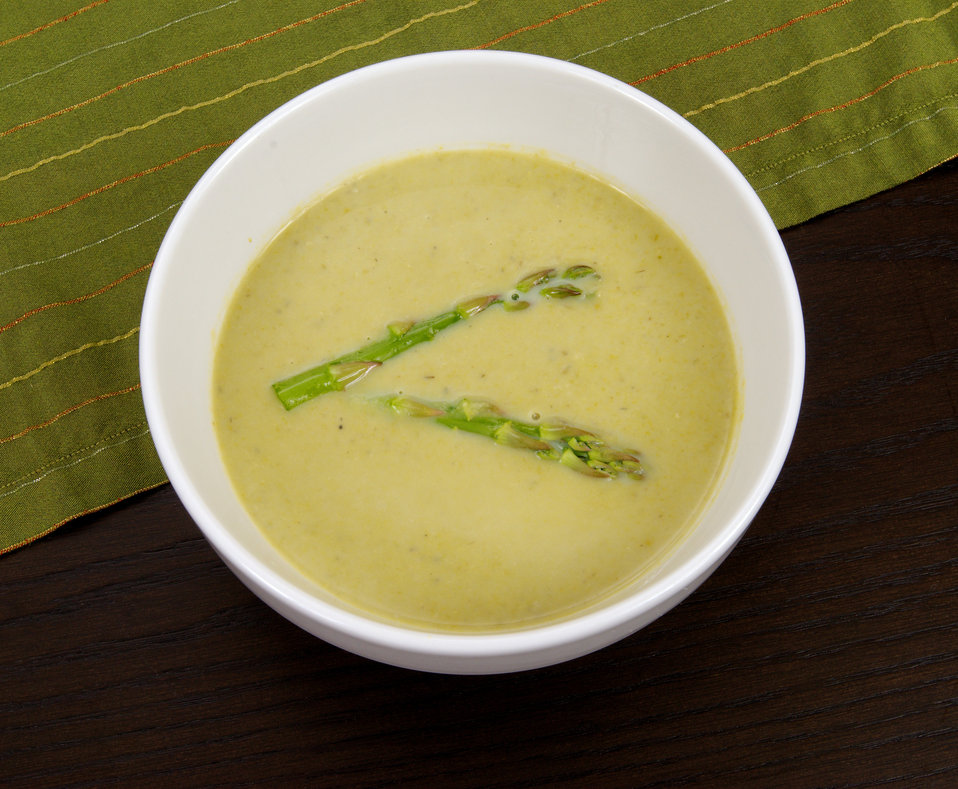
This asparagus soup was made using very little salt, soy milk rather than whole milk and margarine rather than butter.